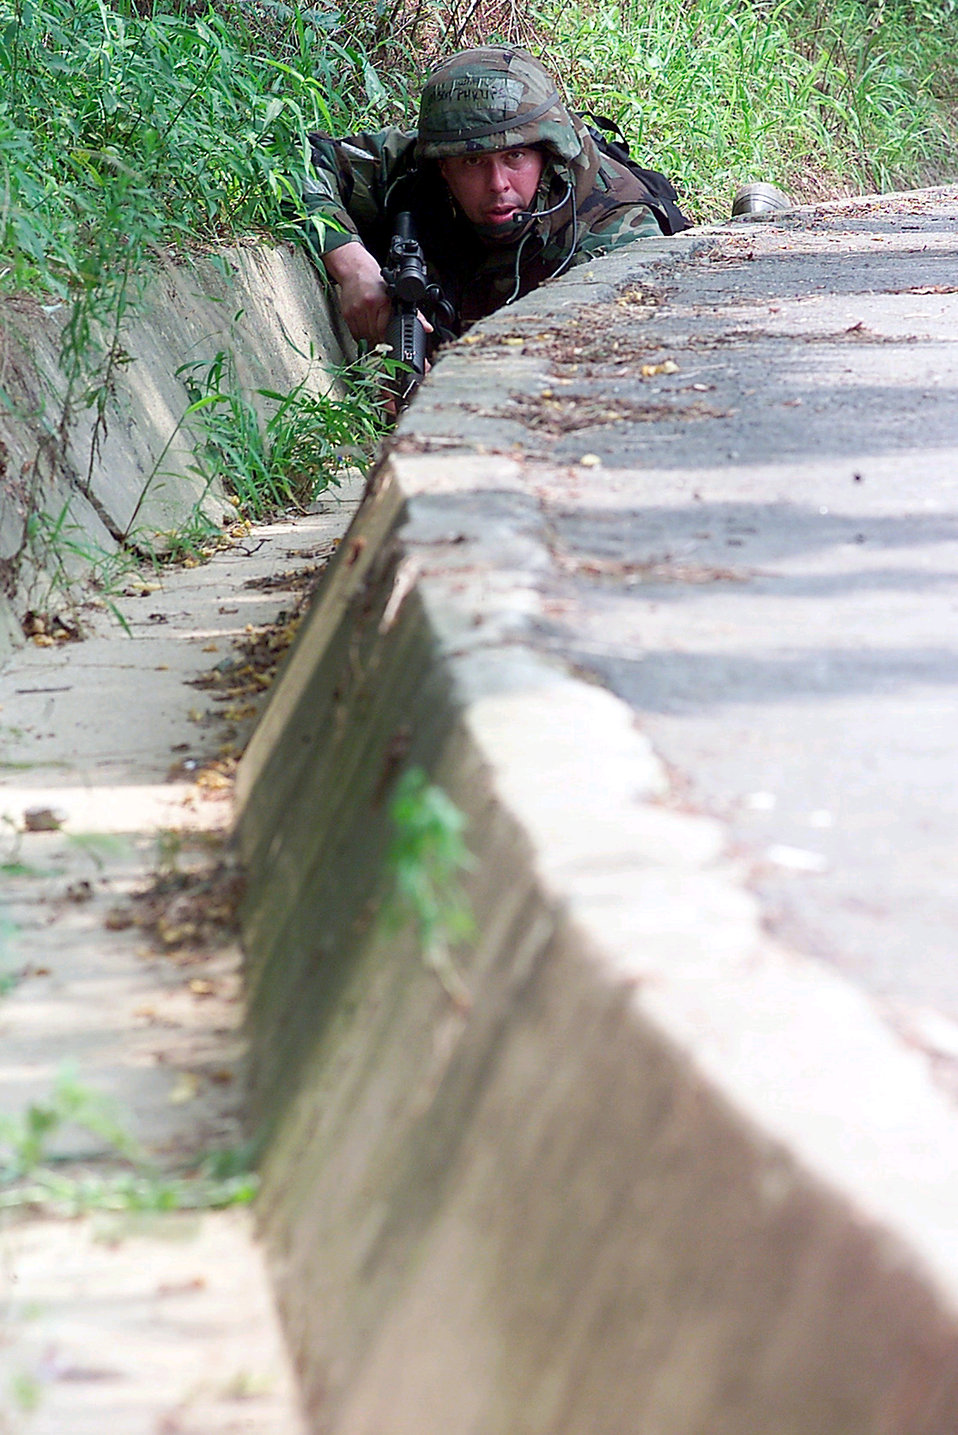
No ditching duty

OSAN AIR BASE, South Korea -- Master Sgt. W. Phillips takes aim at enemy forces as they attack during exercise Beverly Bulldog 04-03 here July 21.